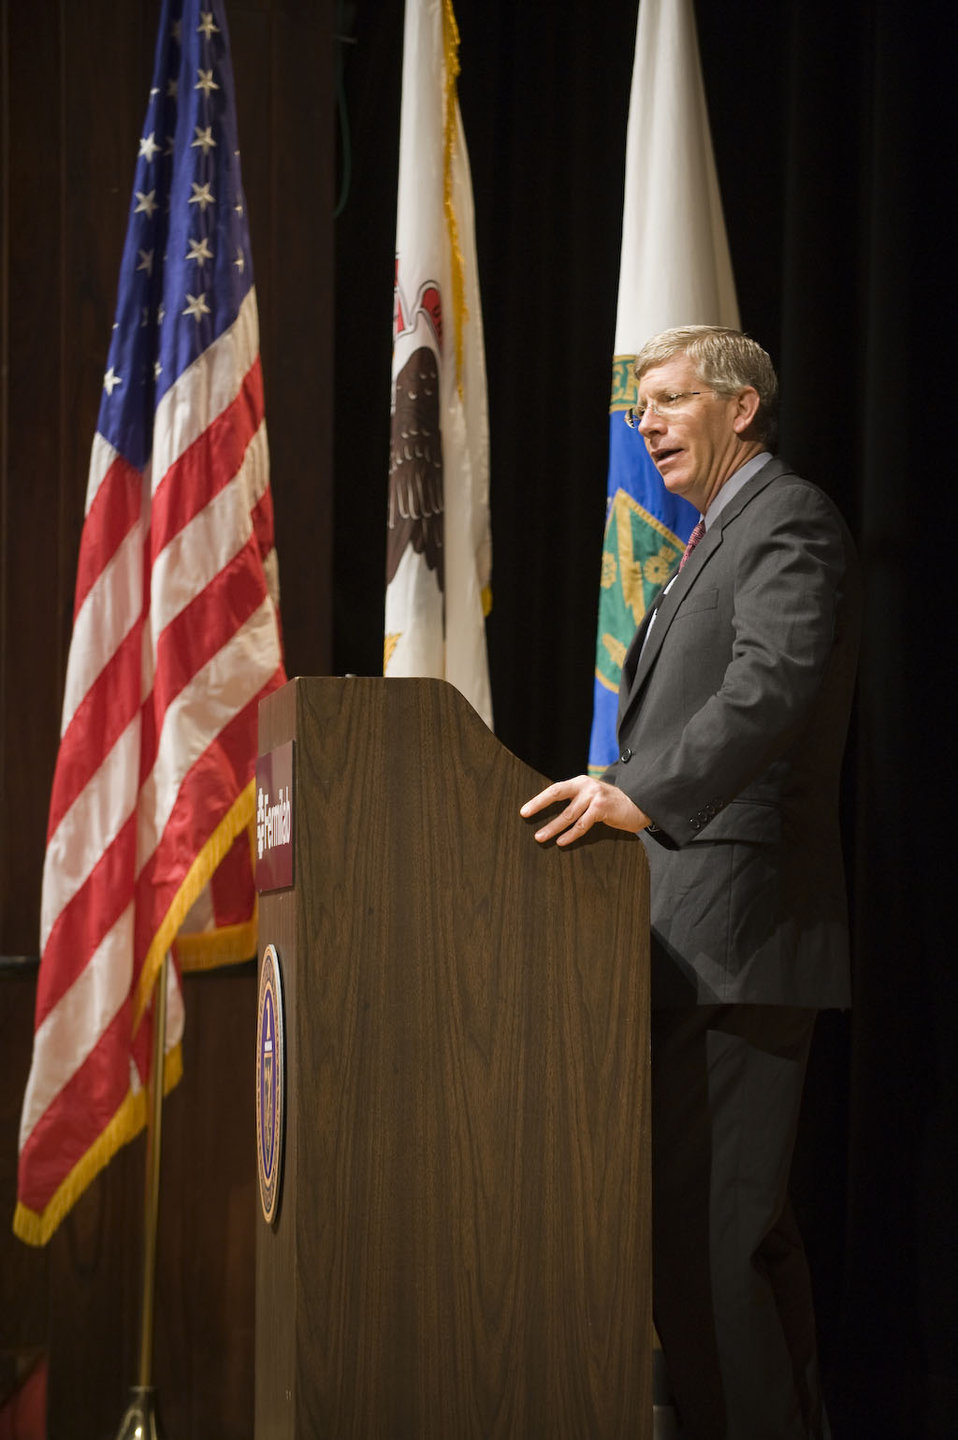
Deputy Secretary Daniel Poneman thanks employees at Fermilab for their hard work and discusses the importance of their cutting-edge research during a visit to the site.